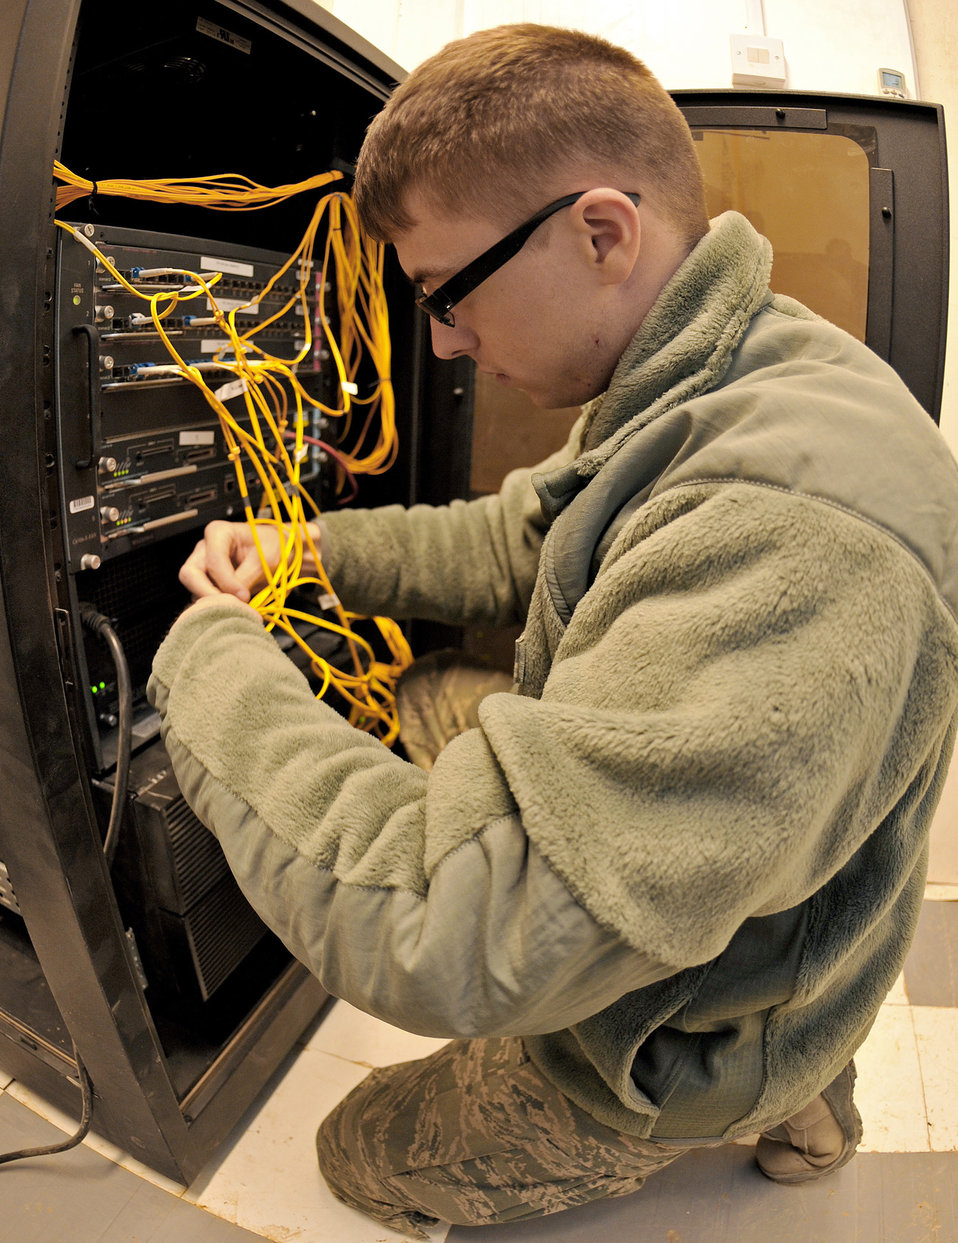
COB Speicher

Senior Airman Raymond Harmon reorganizes wires inside an area distribution node Jan. 20, 2011, on Contingency Operating Base Speicher, Iraq. Airman Harmon is a COB Speicher direct-support-signal-team network administrator.